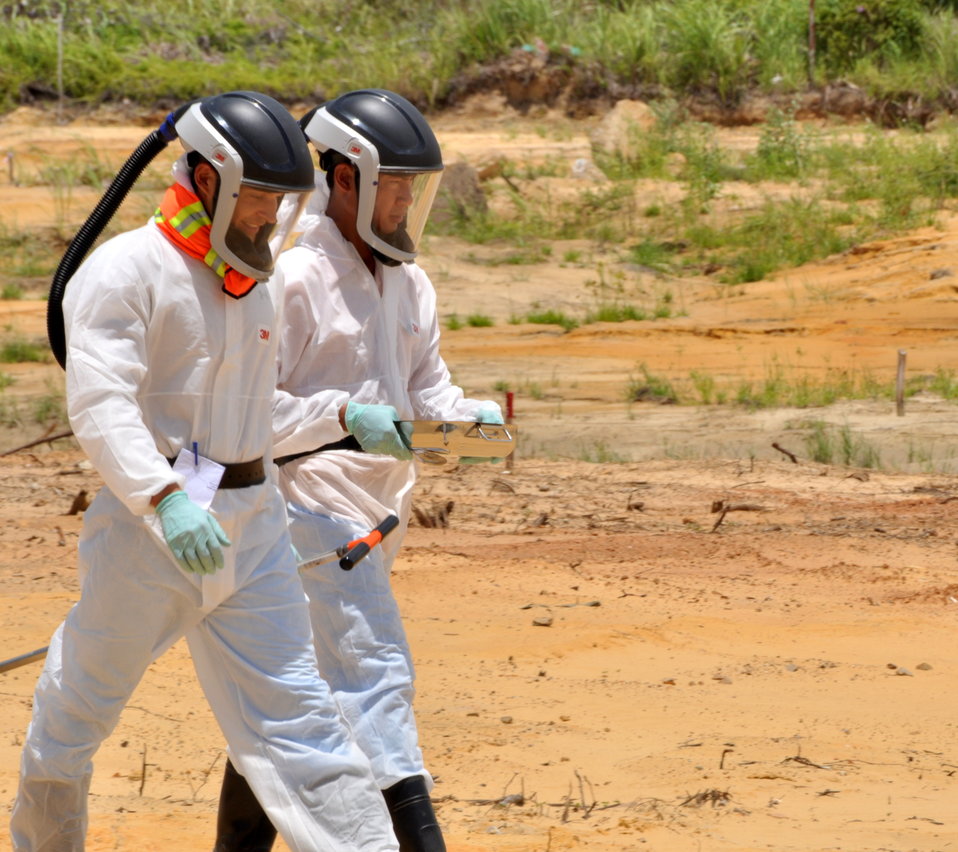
USAID Dioxin Contamination Project Progress: Soil Sampling

Progress at the Environmental Remediation of Dioxin Contamination Project at Danang Airport

July 16, 2013